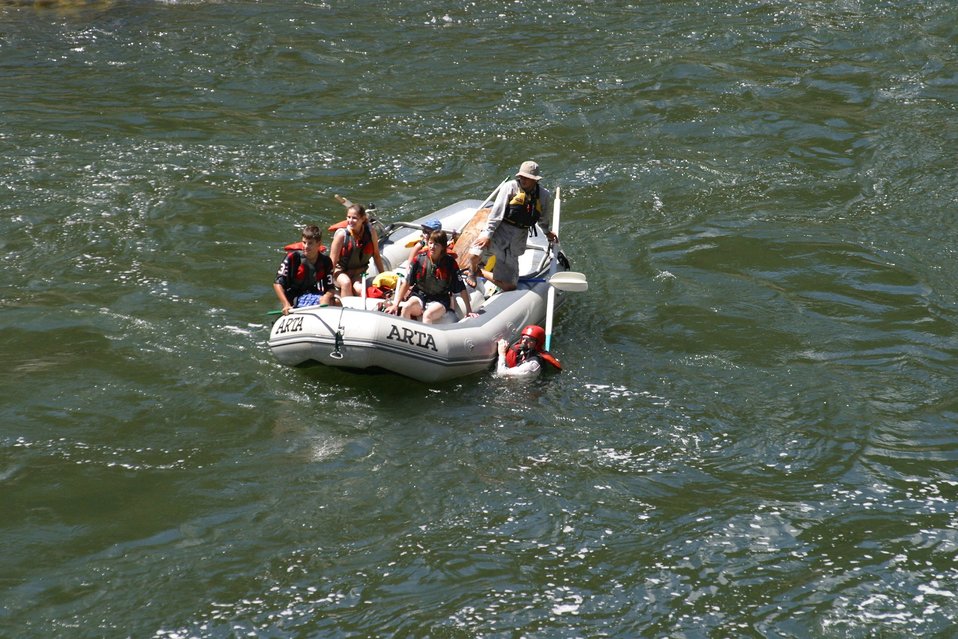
Boater at Grave Creek Falls